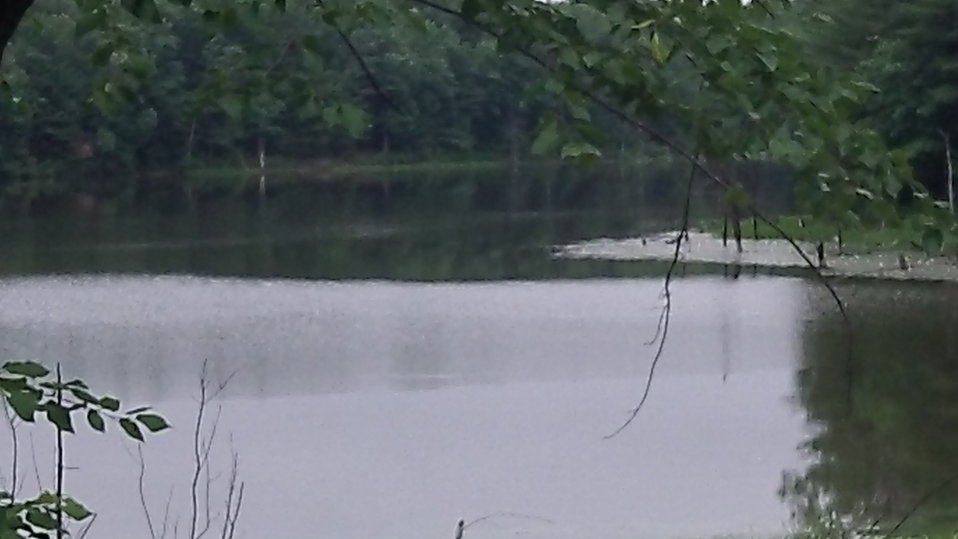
Assabet River National Wildlife Refuge, Sudbury, MA.